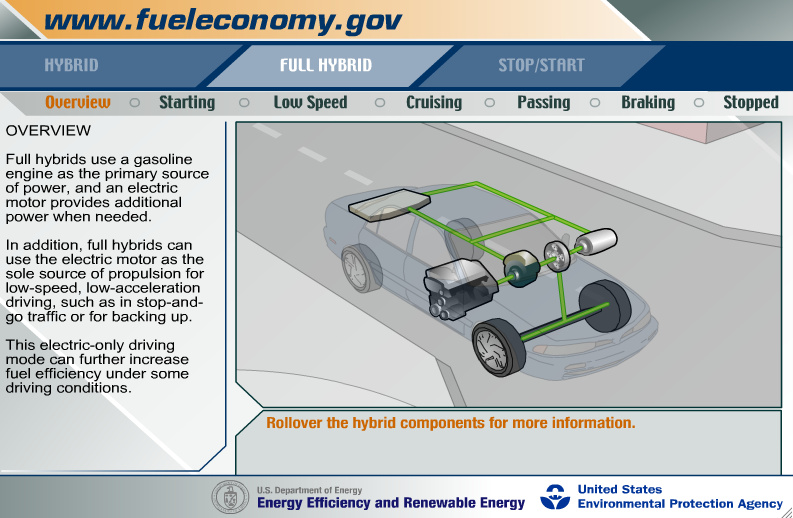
Full Hybrid Overview

Full hybrids use a gasoline engine as the primary source of power, and an electric motor provides additional power when needed.